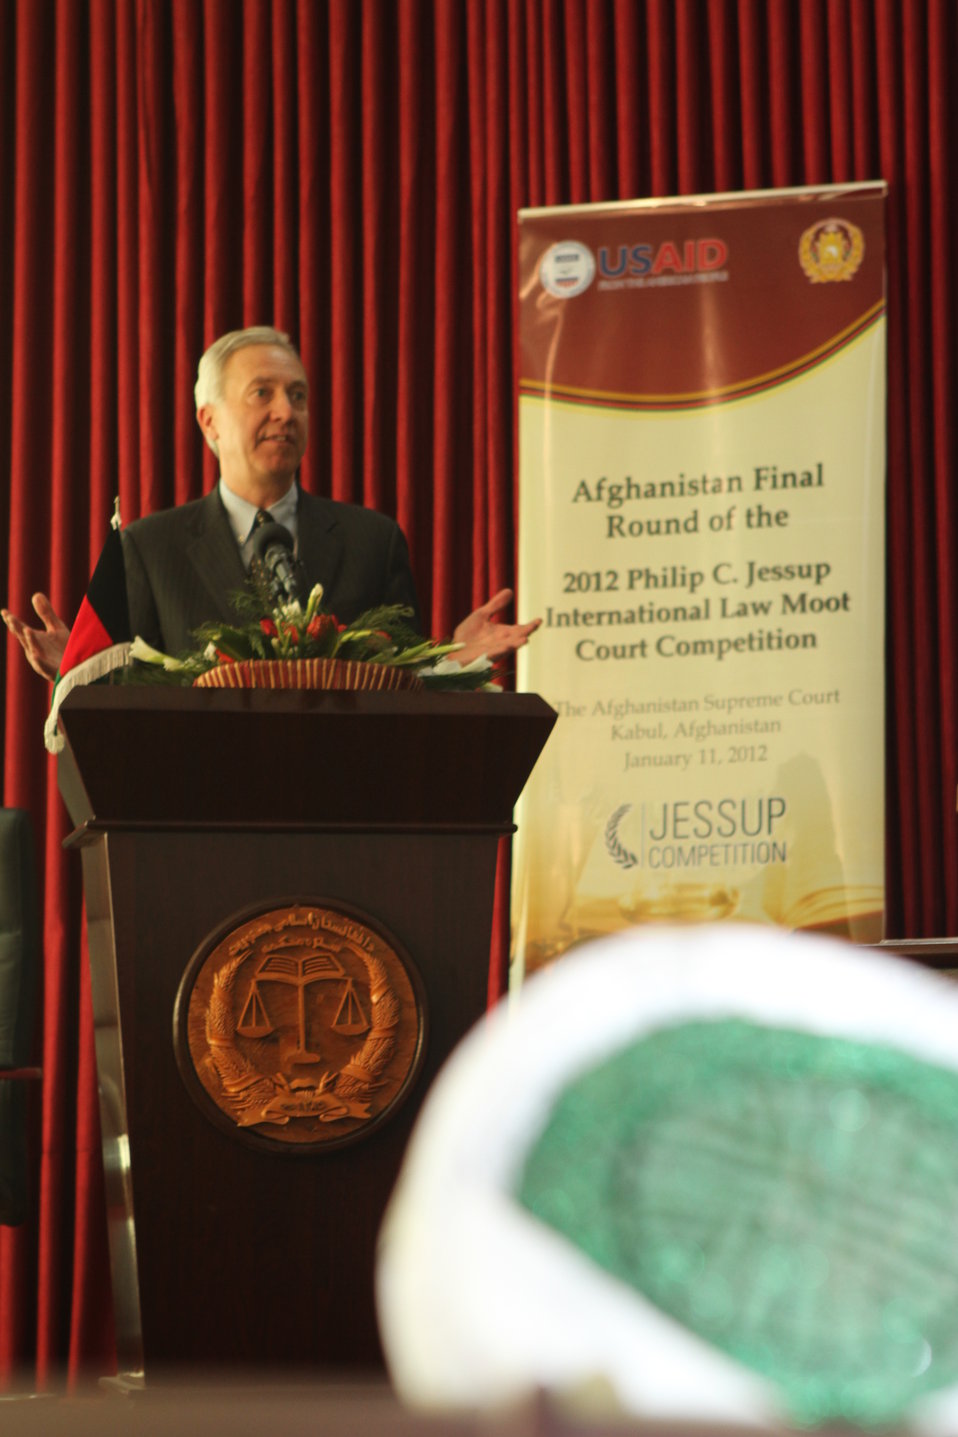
Jessup Moot Court

U.S. Ambassador Hans Klemm, Coordinating Director of Rule of Law and Law Enforcement congradulates the participants during the 2012 Jessup Moot Court, Kabul, Afghanistan, January 11, 2012